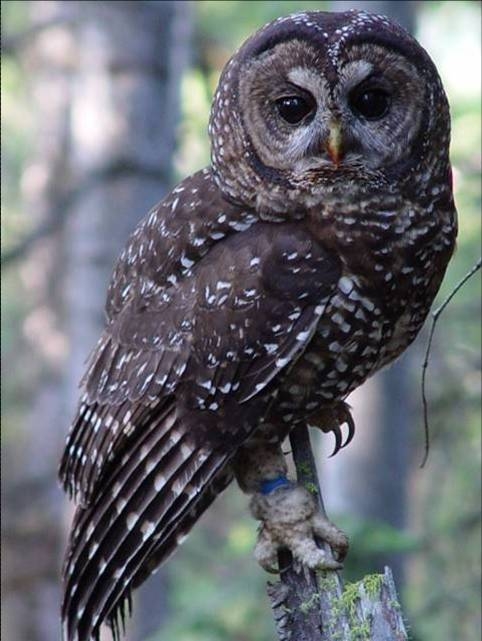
Northern Spotted Owl